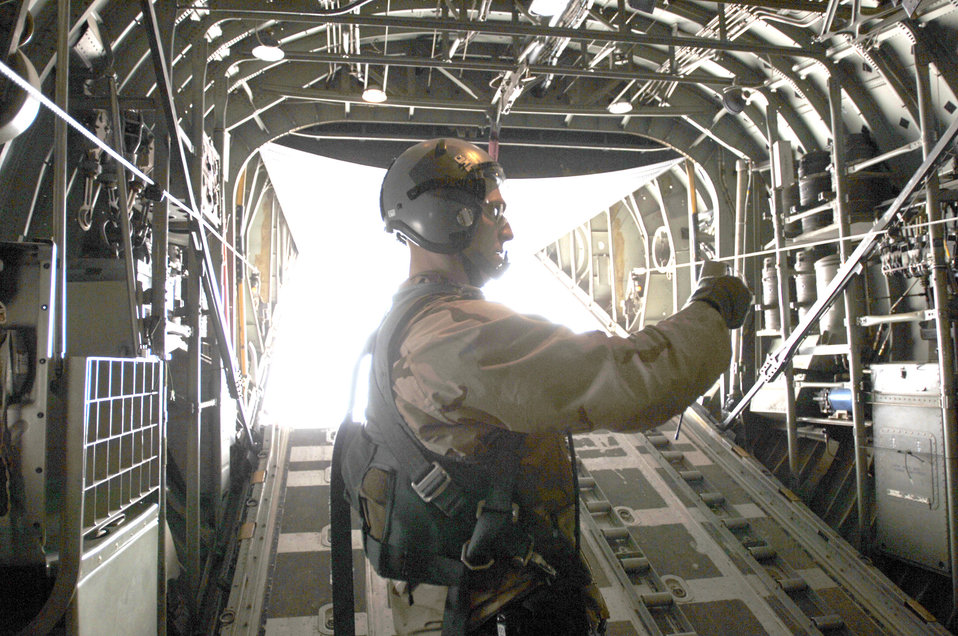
First JPADS airdrop over Iraq a success

Staff Sgt. Dan Maslowski prepares to release a wind sonde sensor that provides weather analysis of drop zone winds just prior to the first employment of the Joint Precision Airdrop System in combination with the Improved Container Delivery System over Iraq Feb. 16. Pairing the JPADS mission planning software with the I-CDS bundles increases airdrop accuracy by 60 percent. Sergeant Maslowski is assigned to the 777th Expeditionary Logistics Readiness Squadron.